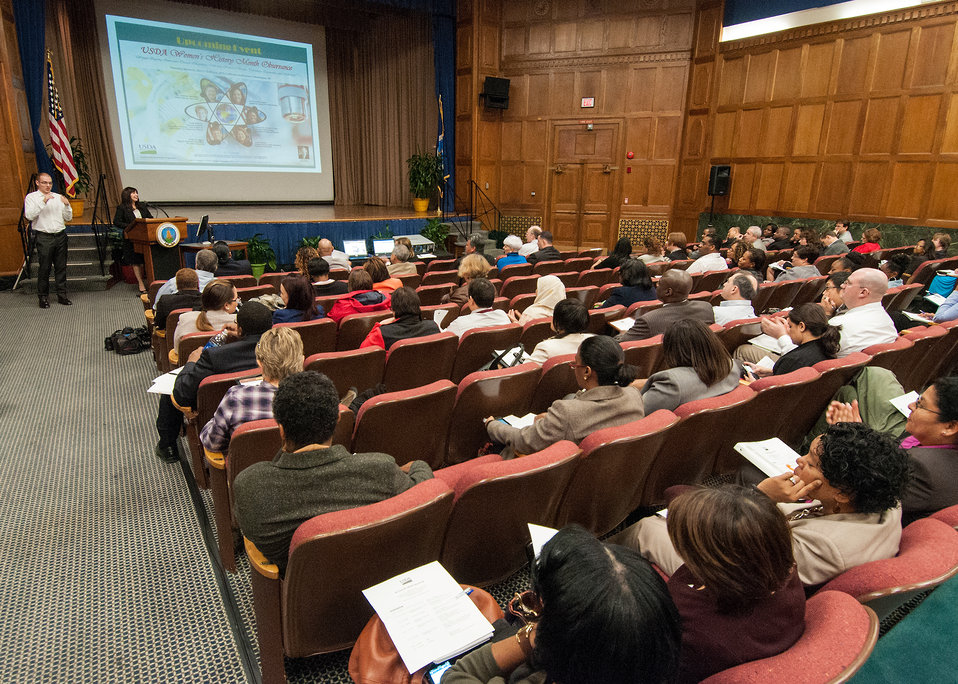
U.S. Office of Personnel Management (OPM) Office of Diversity and Inclusion Director Veronia Villalobos discusses OPM Government Wide Initiatives at the First Annual All Hands Special Emphasis Program Managers (SEPM) Meeting at the U.S. Department of Agriculture Jefferson Auditorium in Washington, D.C. on Wednesday, Mar. 13, 2013.